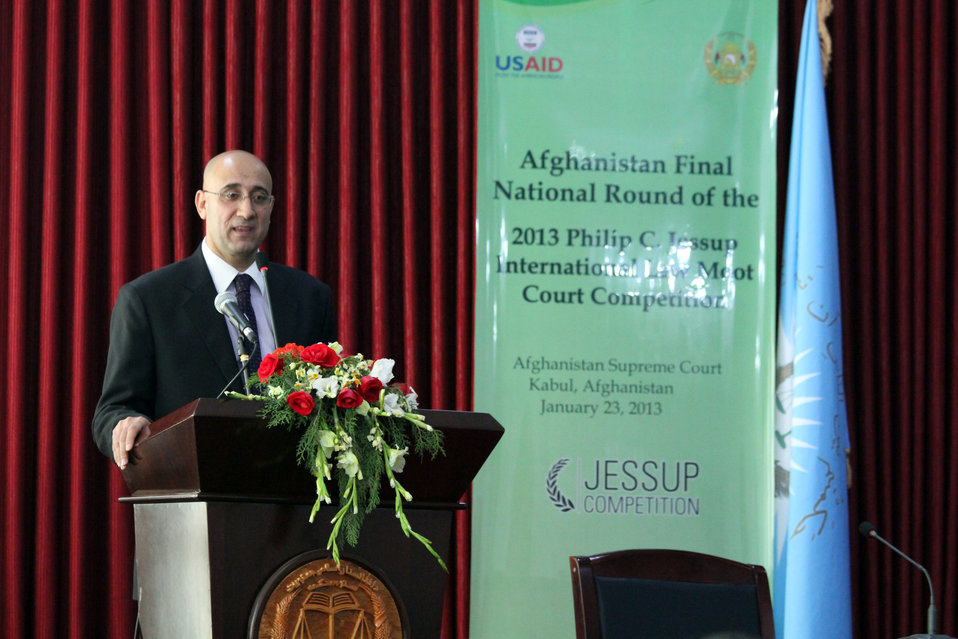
Afghanistan Final National Round of the 2013 Philip C.Jessup International Law Moot Court Competition